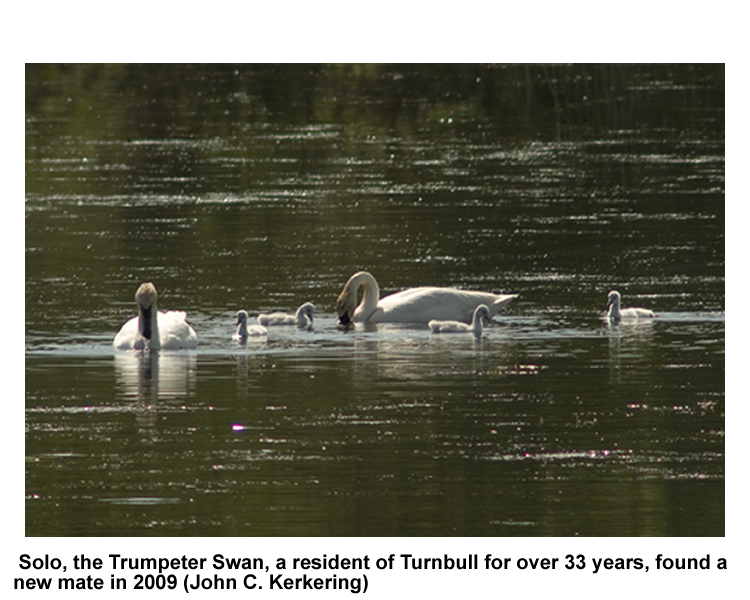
Trumpeter swan and cygnets - Turnbull NWR

Along with Solo, the Trumpeter Swan, a growing wintering flock and local breeding population of trumpeter swans are using Turnbull NWR.